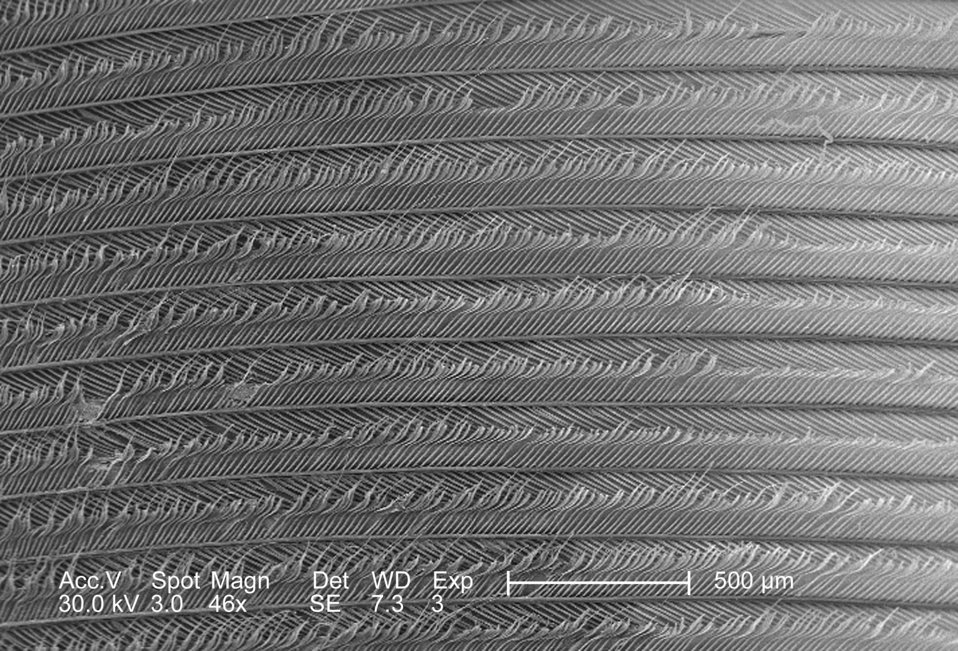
This scanning electron micrograph (SEM), at a low level magnification of 46x, depicted the strut-like configuration of an unidentified bird feather found on the ground in the Decatur, Georgia suburbs.